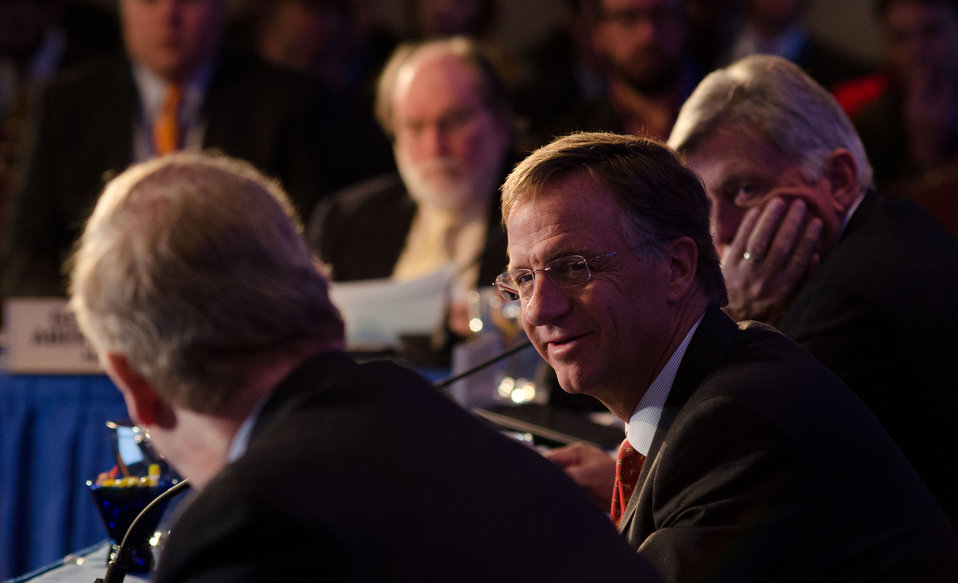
Agriculture Secretary Tom Vilsack was a guest speaker at the National Governors Association Education, Early Childhood and Workforce Committee meeting in Washington, D.C., on Sunday, Feb. 26, 2012.